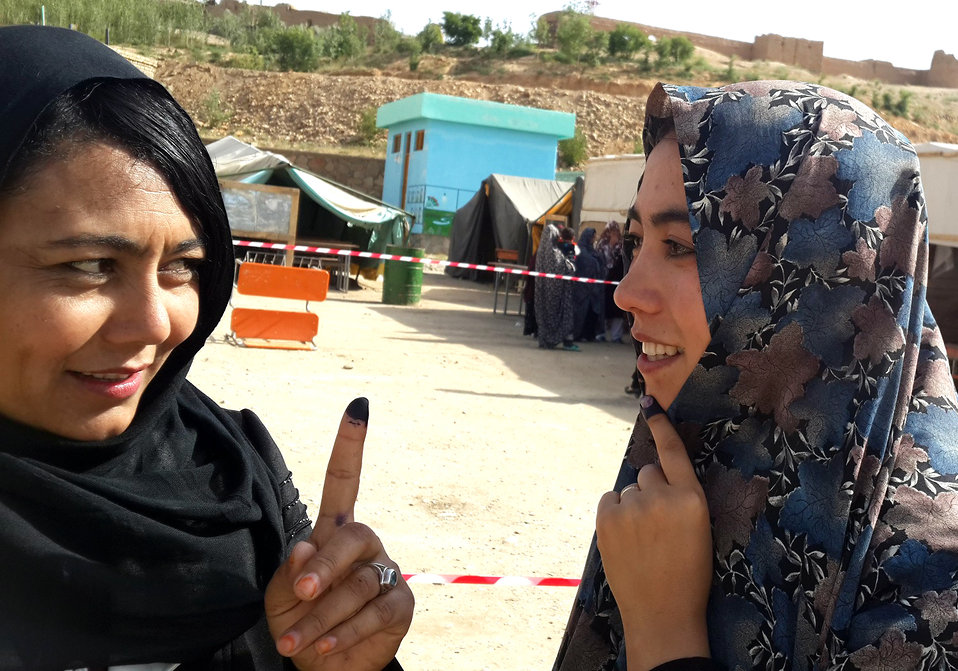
Two Afghan women talk after casting ballots in Ghor province.